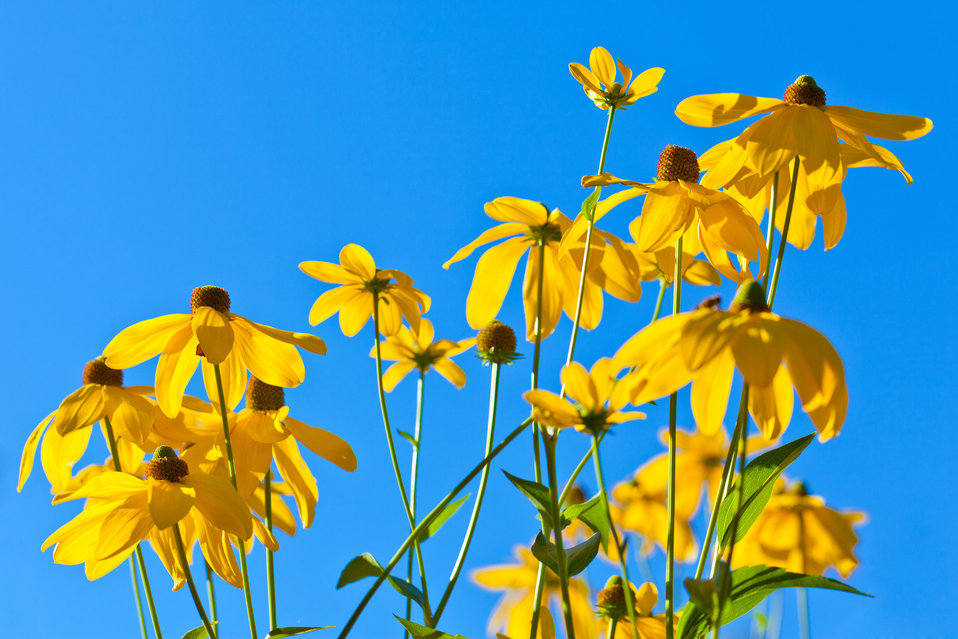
Yellow flowers against sky

Yellow flowers against blue sky.